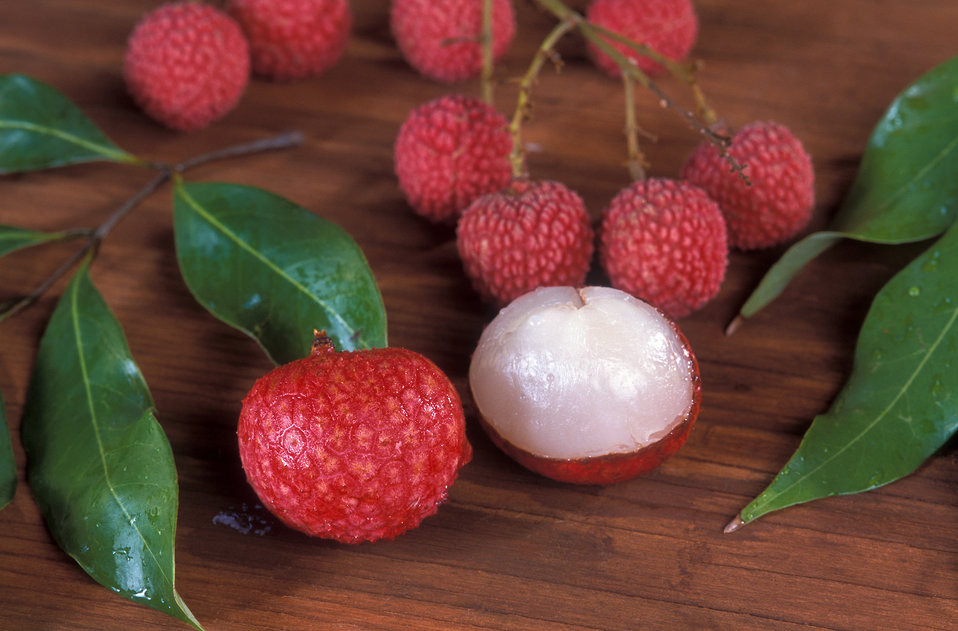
A Lychee (Litchi chinensis) fruit is sliced in half revealing its whitish colored flesh on Apr. 30, 2009. Lychee was first introduced into Hawaii 100 years ago but has been cultivated in China for nearly 4,000 years.